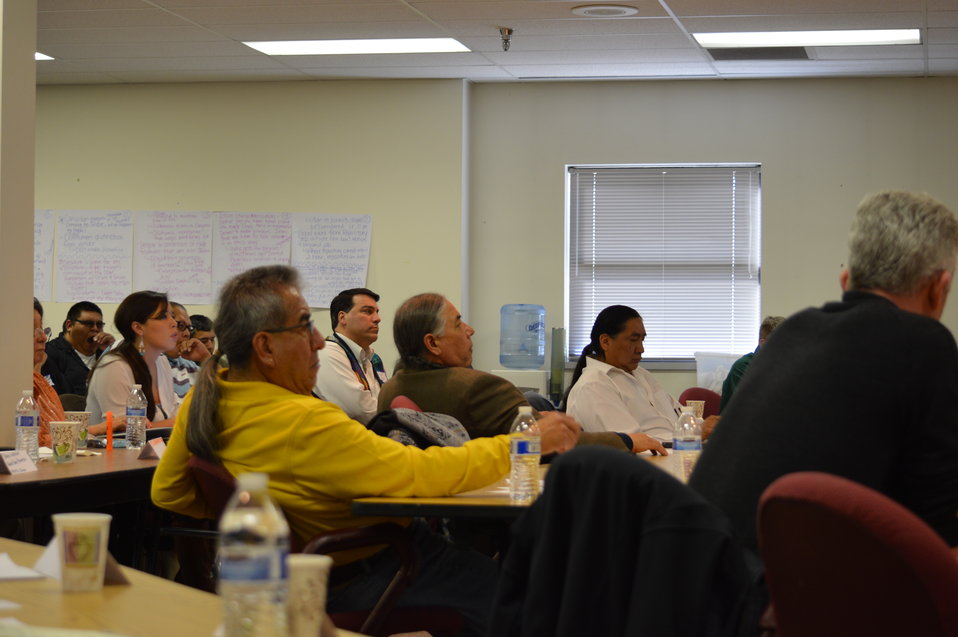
Eagle Summit III

Attendees of the Eagle Summit III in Denver, Colorado on March 20, 2014 at the Rocky Mountain Arsenal National Wildlife Refuge.